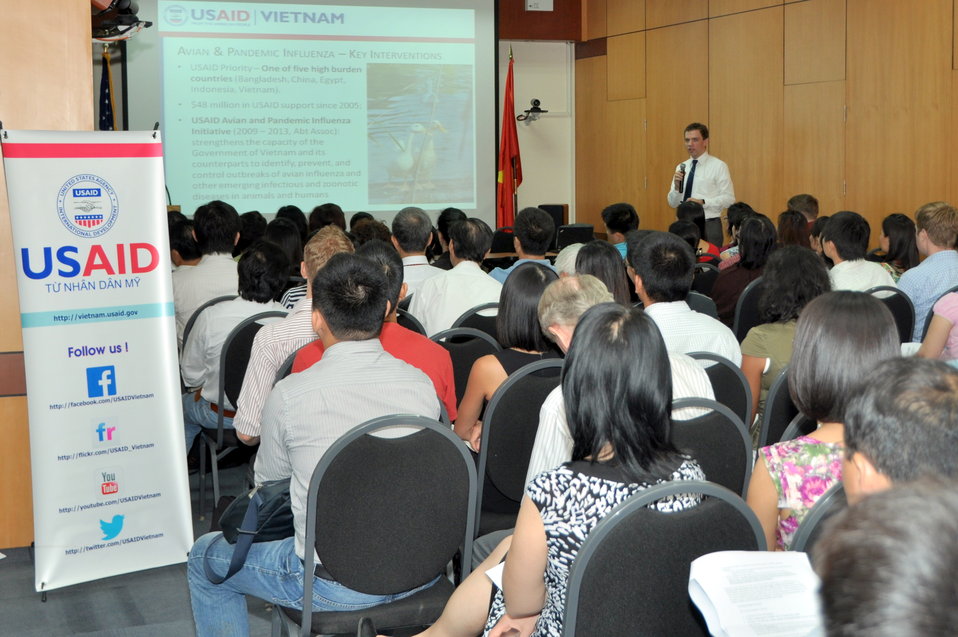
Development Grants Program Workshop in Hanoi

July 24, 2013